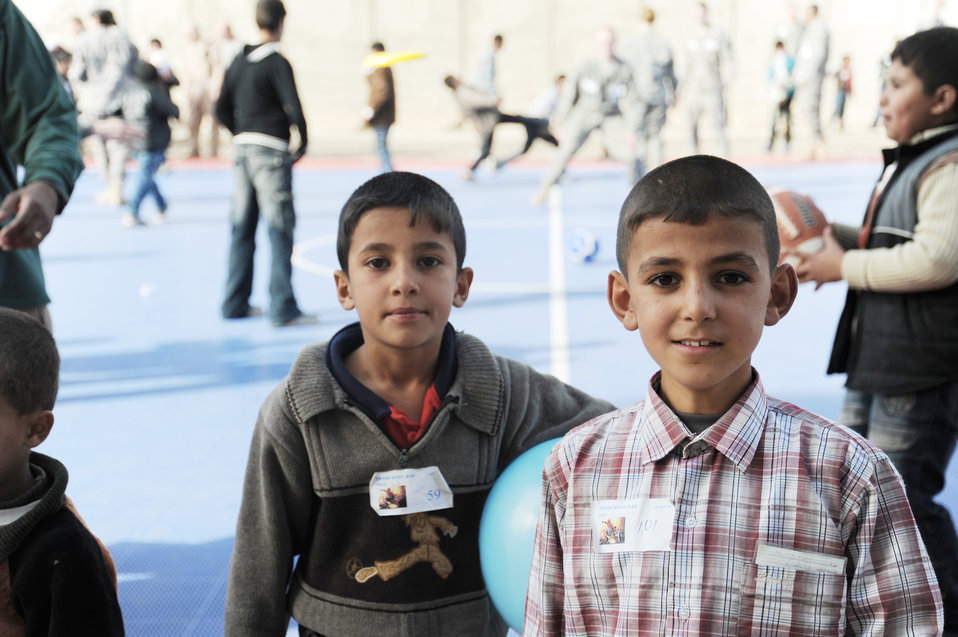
Iraqi kids, U.S. servicemembers enjoy another day of fun, education

Two Iraqi boys pose for a photo they requested during Iraqi Kids Day Dec. 19, 2009, at Joint Base Balad, Iraq. The event was part of the ongoing base effort to directly engage the local populace, bringing kids from neighboring villages together with U.S. military volunteer mentors for a day of fun, games and culture sharing.